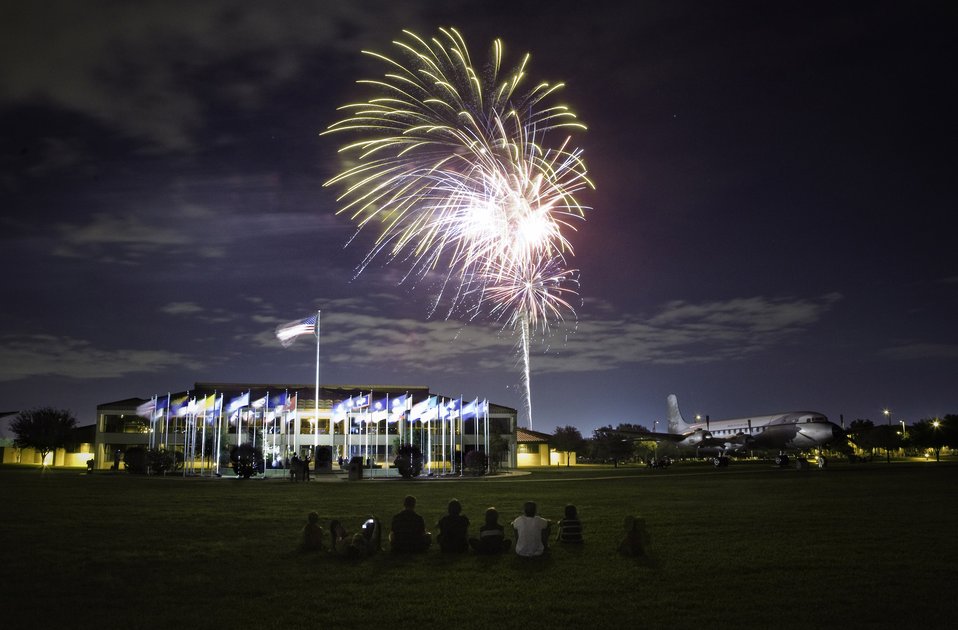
Evening Under the Stars

Spectators view fireworks from the parade grounds at Lackland Air Force Base, Texas. Lackland celebrated its 30th Star Spangled Festival July 4 by hosting activities and events to include live entertainment, a children's carnival, contests and exhibitions.